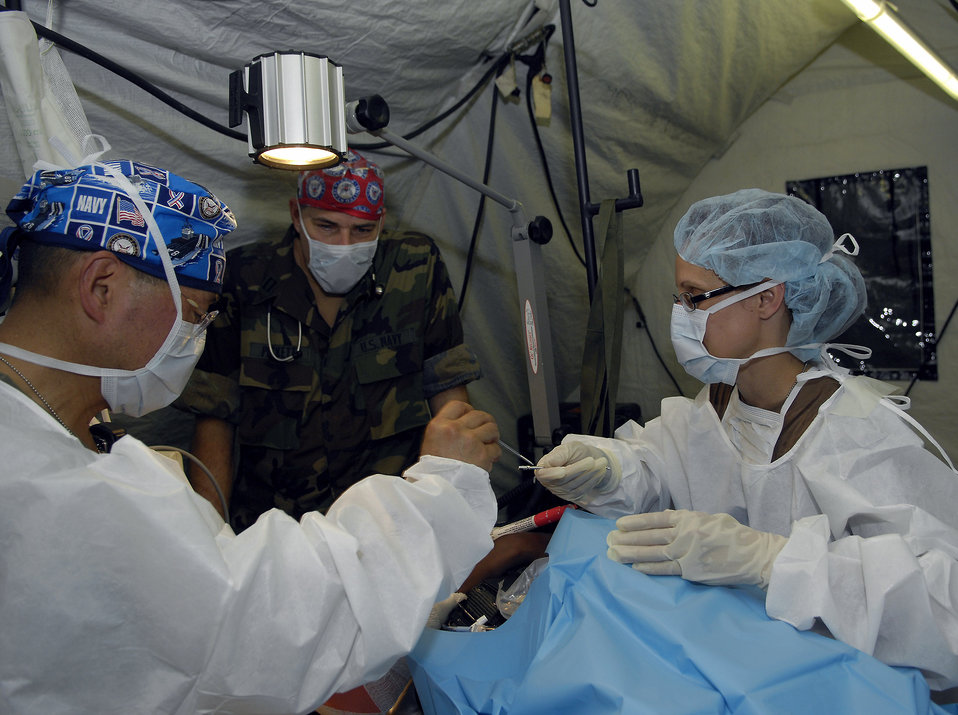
American and African medical personnel train together

Lt. Cmdr. Terry Lein passes Capt. William Oh a pin to insert in a simulated broken arm during a mass casualty training exercise July 18 in Bamako, Mali. More than 90 servicemembers deployed for MEDFLAG 08, a multi-national medical training exercise designed to enhance medical capabilities and readiness for U.S. and African Forces. Captain Oh is deployed from Naval Operational Support Unit, Toledo, Ohio. Commander Lein is deployed from the Operational Hospital Support Unit, Camp LeJeune HQ, N.C.